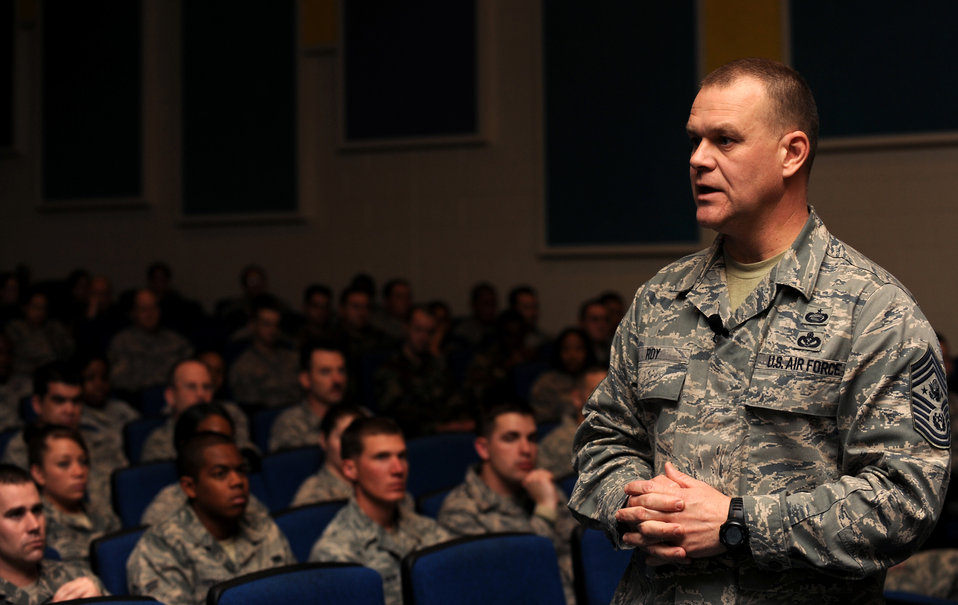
Chief Master Sgt. of the Air Force visits Nellis Air Force Base

Chief Master Sgt. of the Air Force James A. Roy hosts an enlisted call Jan. 22, 2010, at Nellis Air Force Base, Nev.